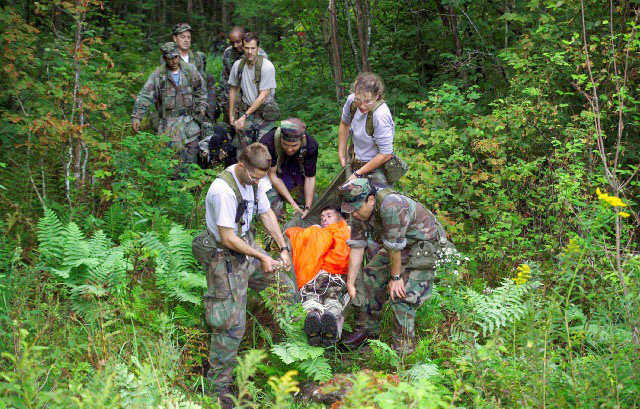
Airman becomes Astronaut

NASA's newest class of astronauts conducts an emergency egress drill during 2004 ASCAN land survival training in the wilderness near Brunswick, Maine. In the foreground, left to right, astronaut candidates James Dutton Jr., Akihiko Hoshide, Dorothy Metcalf-Lindenburger and Satoshi Furukawa use a makeshift gurney to extract fellow astronaut candidate Robert Kimbrough from the woods. In the back, Joseph Acaba, Richard Arnold II, Robert Satcher Jr. and Thomas Marshburn carry Christopher Cassidy. Hoshide and Furukawa represent the Japan Aerospace Exploration Agency.